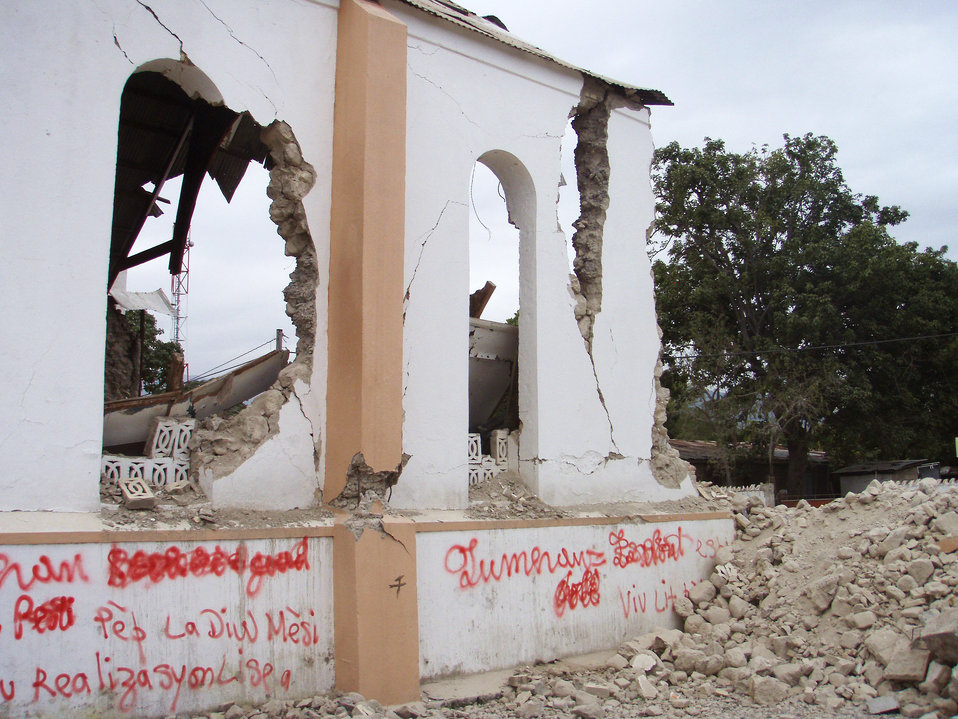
Depicted here, is some of the devastating damage inflicted upon the country of Haiti in the aftermath of the 2010 earthquake. This image was one of many captured by Lt. Cmdr. Gary Brunette, a United States Public Health Service (USPHS) officer, who'd been deployed to this Caribbean region.